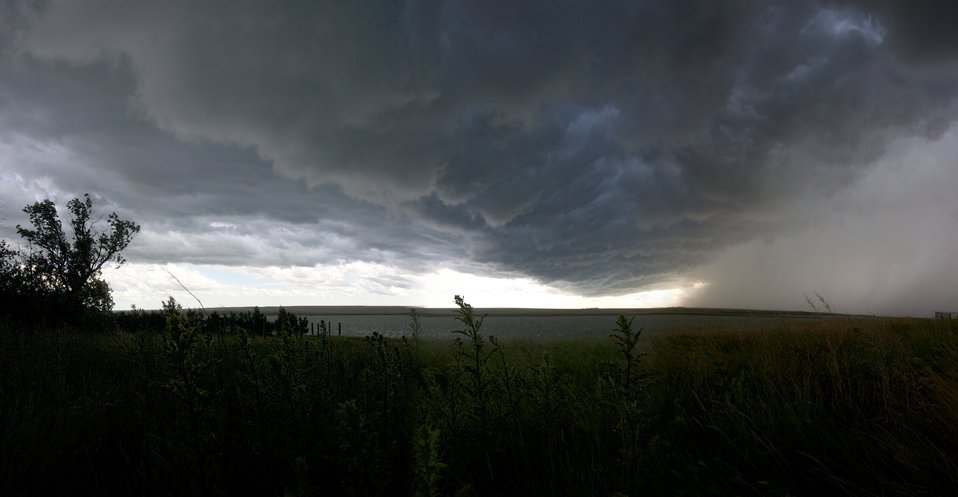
Medicine Lake NWR Storm

Approaching Thunder- Unlike many other parts of our Nation, where skyscape views are obstructed by trees, mountains, and higher-density land uses, in the the Northern Prairie one can see whole storm fronts advancing.

Location: Medicine Lake NWR

Credit: Jamieson Scott / USFWS

Photo Contest Entry #21